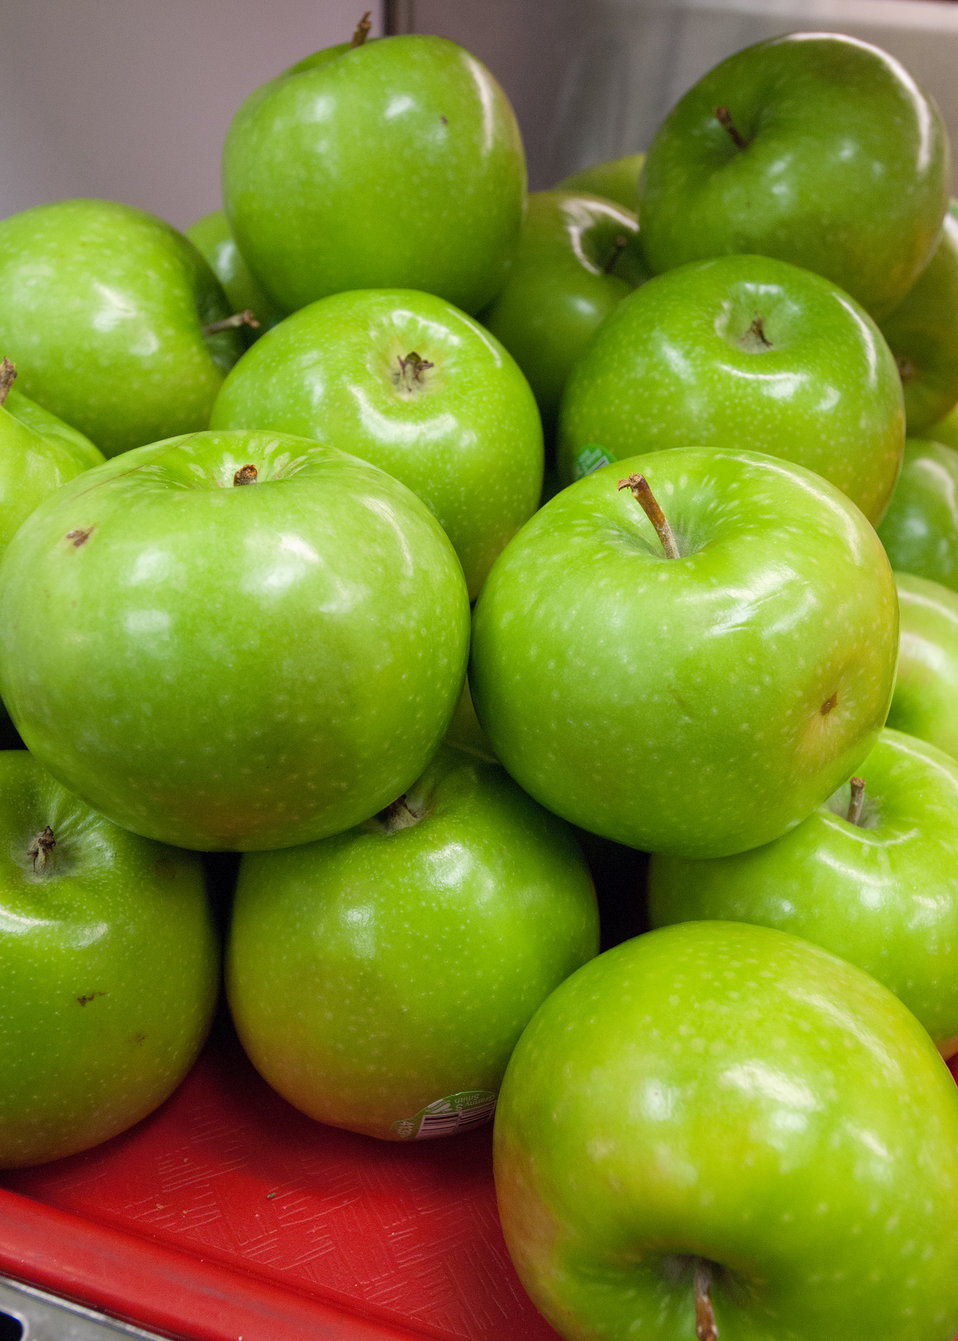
Fresh apples for the National School, Breakfast Program, for students at Washington-Lee High School in Arlington, Virginia, on Wednesday, October 19, 2011. The School Breakfast Program a federally assisted meal program administered by the United States Department of Agriculture, Food and Nutrition Service provides cash assistance to States to operate nonprofit breakfast programs in public, nonprofit private schools and residential child care institutions. The program is administered at the Federal level by USDA, FNS. State education agencies administer the SBP at the State level, and local school food authorities operate it in schools.